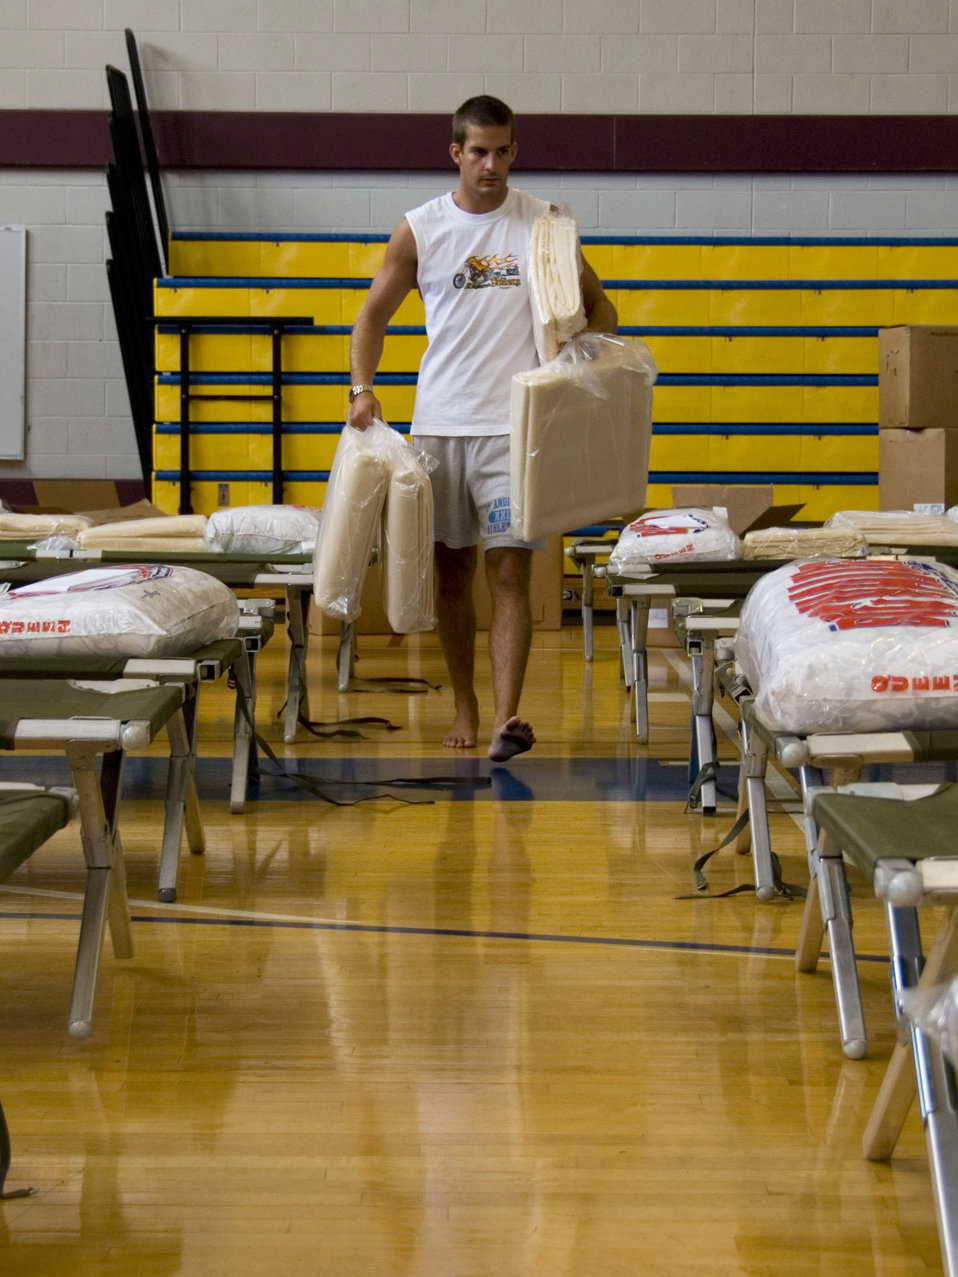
Maxwell officials provide shelter for Gustav evacuees

Jacob Weir, a contractor at Maxwell Air Force Base, Ala., sets up bedding Aug. 31 in the base gymnasium which serves as a temporary shelter for any evacuees arriving from the Gulf coast during Hurricane Gustav.